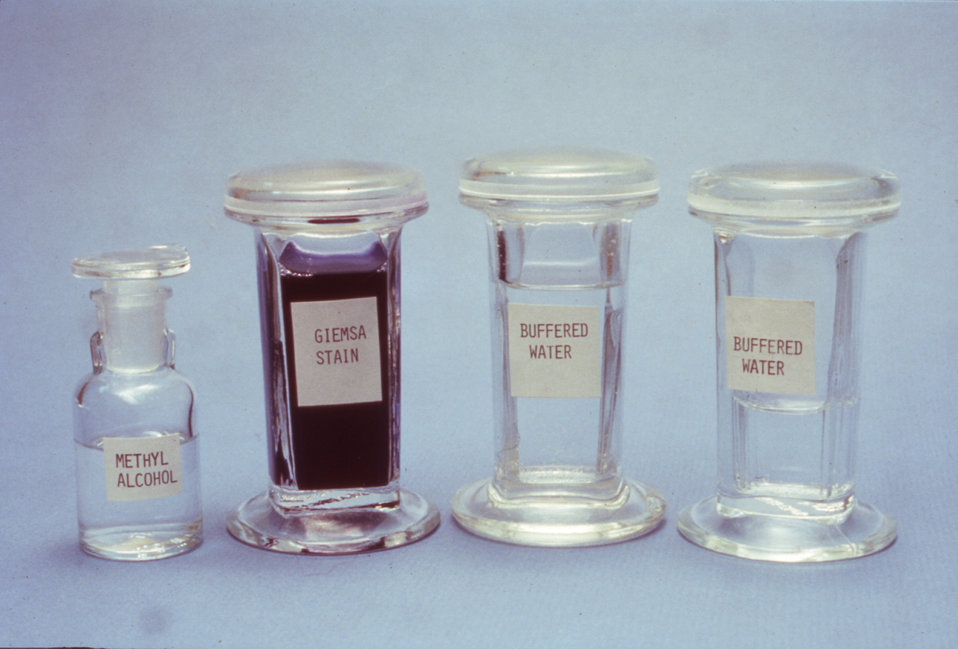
These are some of the materials used during fixation of thin blood films and Giemsa staining in a parasitology lab.